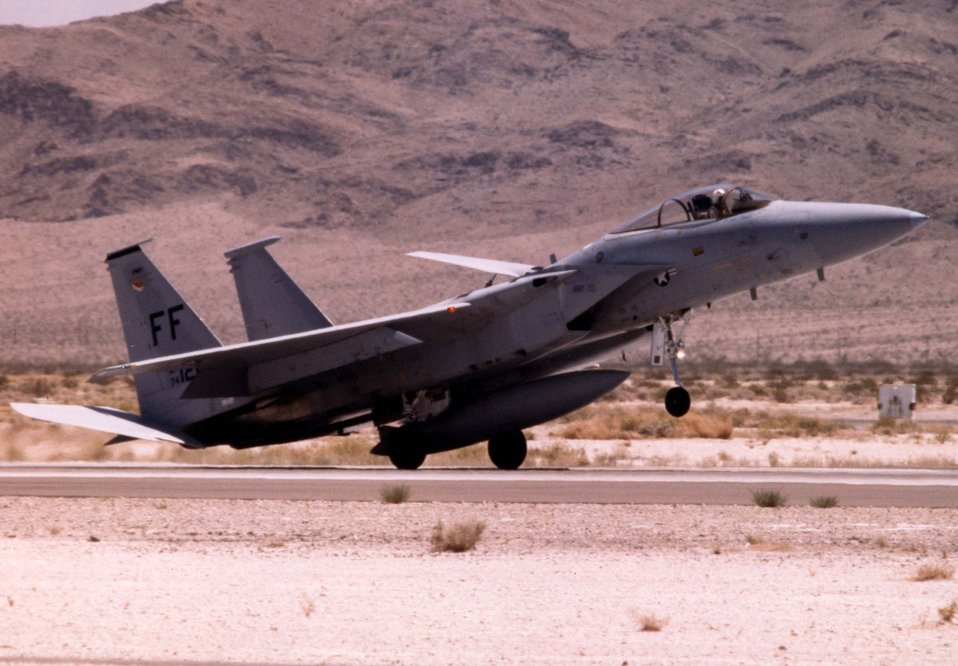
F-15A Eagle

An F-15A Eagle from Langley Air Force Base, Va., lands in an undated photo.